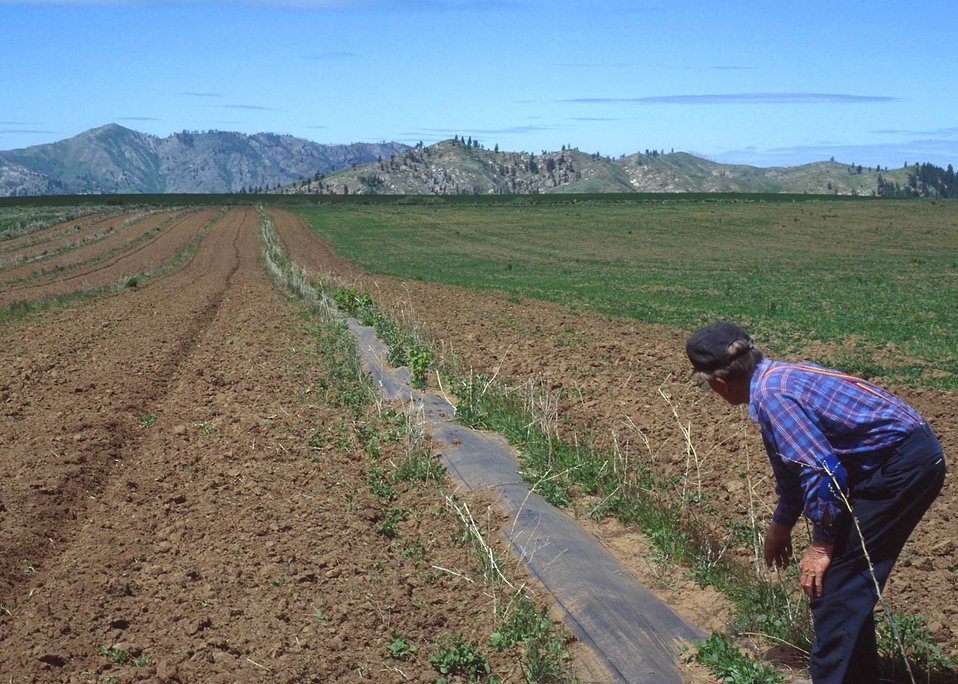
Windbreaks reduce soil erosion from wind and protect plants from wind-related damage.